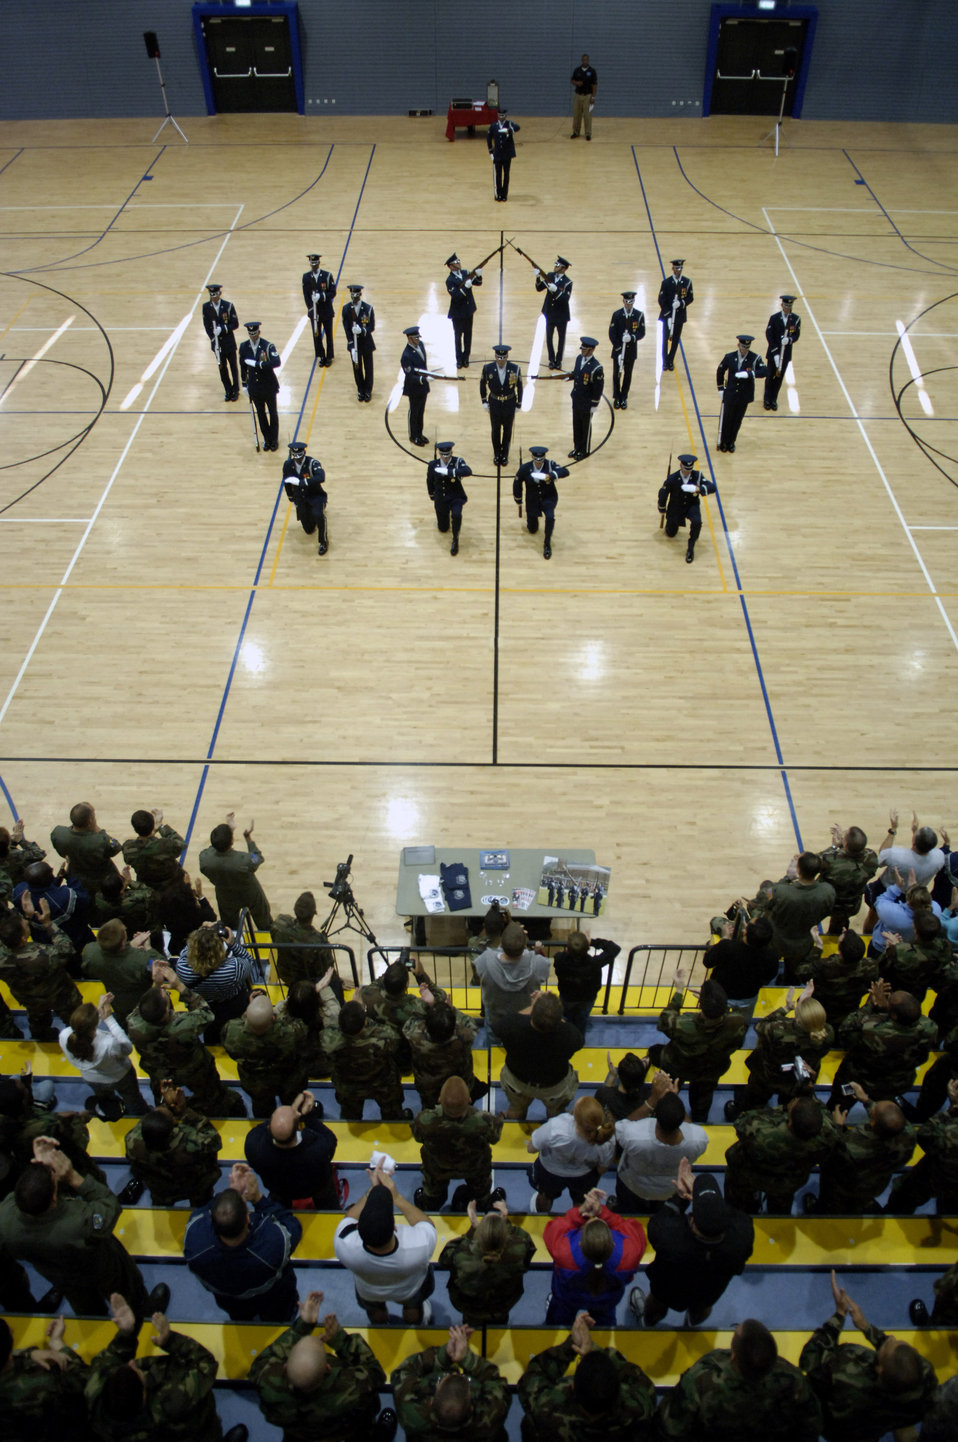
European tour

Airmen at Ramstein Air Base, Germany, give a standing ovation to the U.S. Air Force Honor Guard Drill Team at the conclusion of their performance on Aug. 1. During their European tour, the Drill Team visited five major Air Force installations and events in three countries.